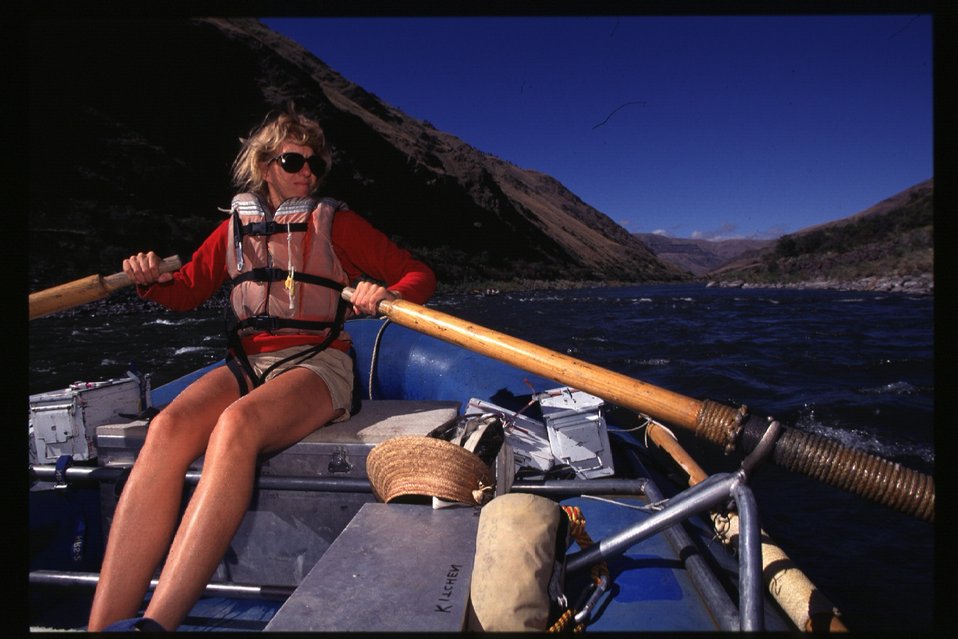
Rafting River Rangers Lower Salmon River Cottonwood Field Office UCSC Upper Columbia Salmon Clearwater District